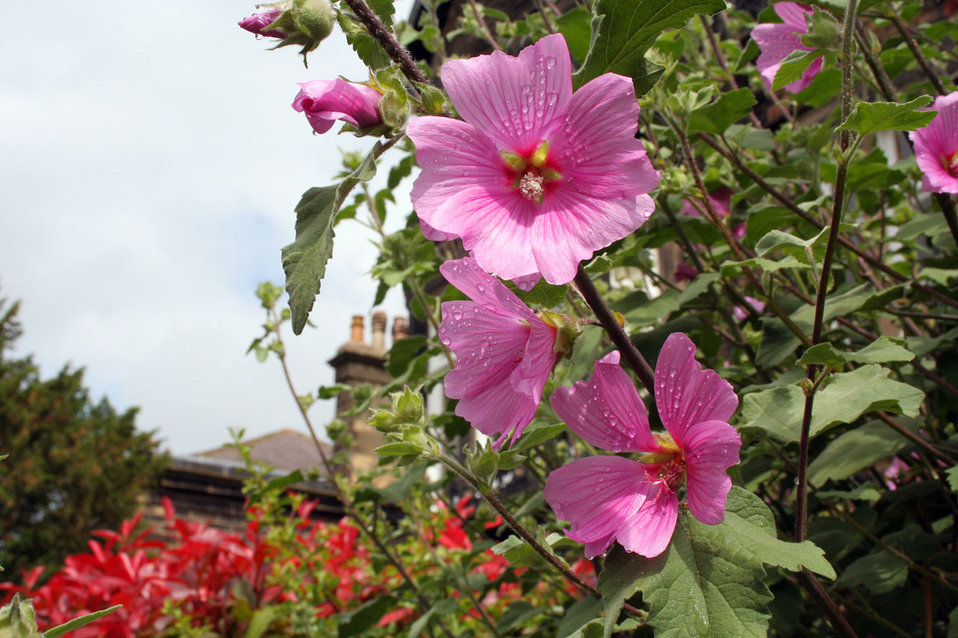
Spring in blossom

Purple flowers in spring.